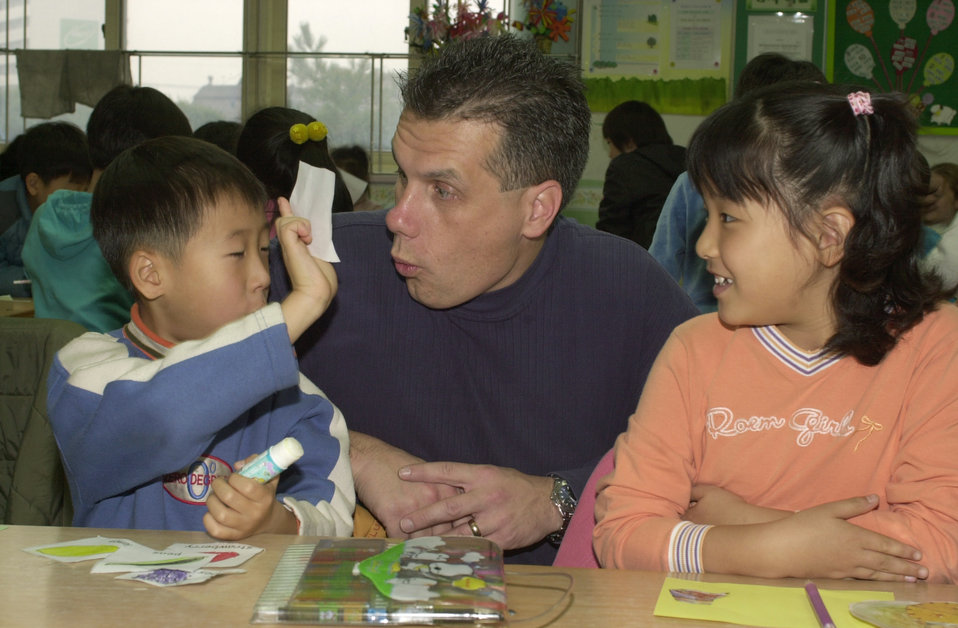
Airmen teach English to South Korean children

SUWON CITY, South Korea -- Master Sgt. John Liss helps teach English to South Korean students here Dec. 4. Once a month Airmen from nearby Osan Air Base visit an elementary school here. The program has been active for five months. Sergeant Liss is assigned to the 51st Medical Group.